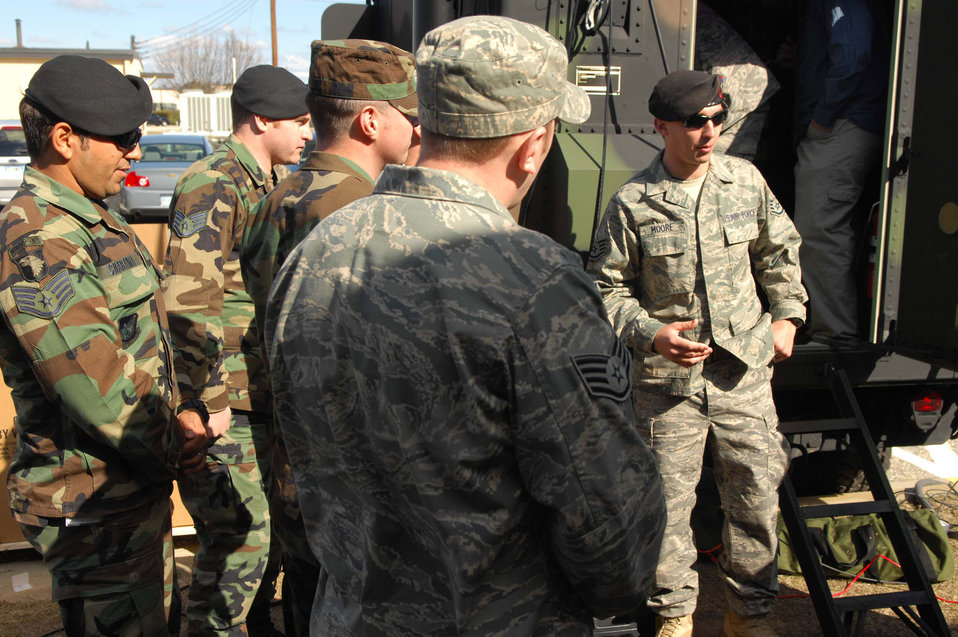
Air Force JTACs train on leading edge technology

Staff Sgt. Andrew Moore describes how the communications systems transmit information on the Air Support Operations Center Gateway vehicle Feb. 27 at Shaw Air Force Base, S.C. Tactical air controllers from all over the Air Force attended a one week training course on this new vehicle in preparation for deployment.